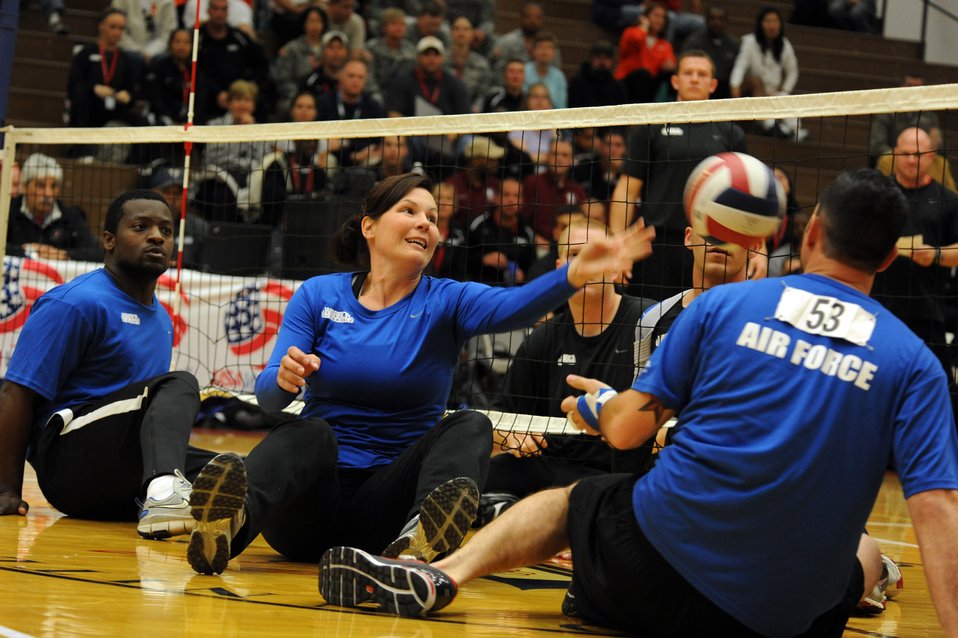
AF Volleyball wins Bronze at Warrior Games

Air Force Warrior Games athlete, Stacy Pearsall, prepares to hit the ball during the Warrior Games sitting volleyball match against Army at the U.S. Olympic Training Center in Colorado Springs, Colo., May 13, 2010.